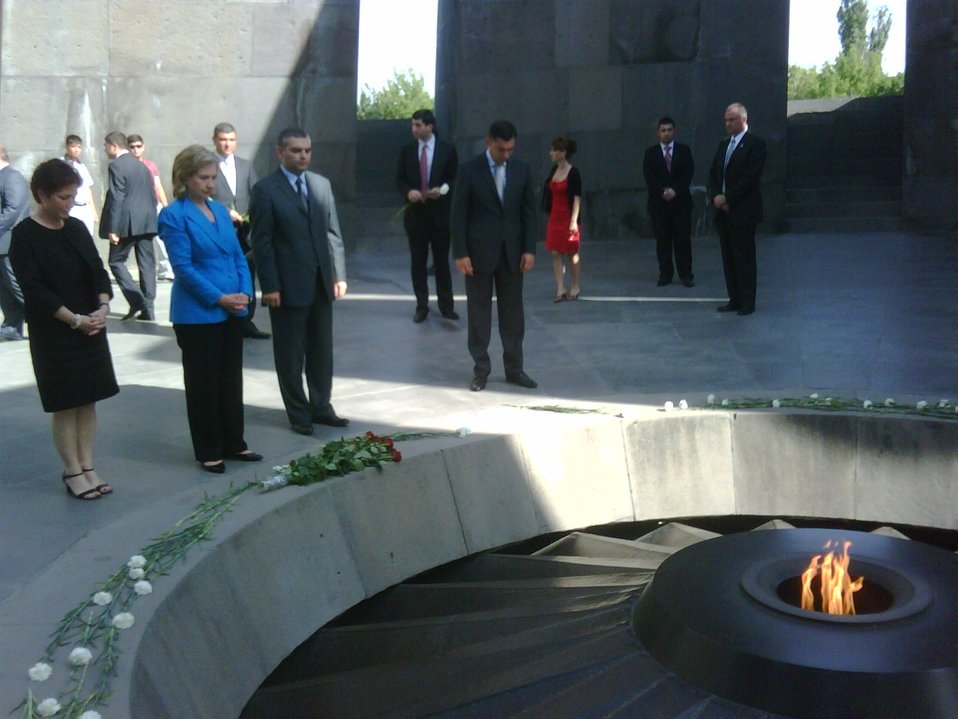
Secretary Clinton Observes a Moment of Silence at the Armenian Memorial

U.S. Secretary of State Hillary Rodham Clinton observes a moment of silence at the Armenian Memorial in Yerevan, Armenia, on July 5, 2010.